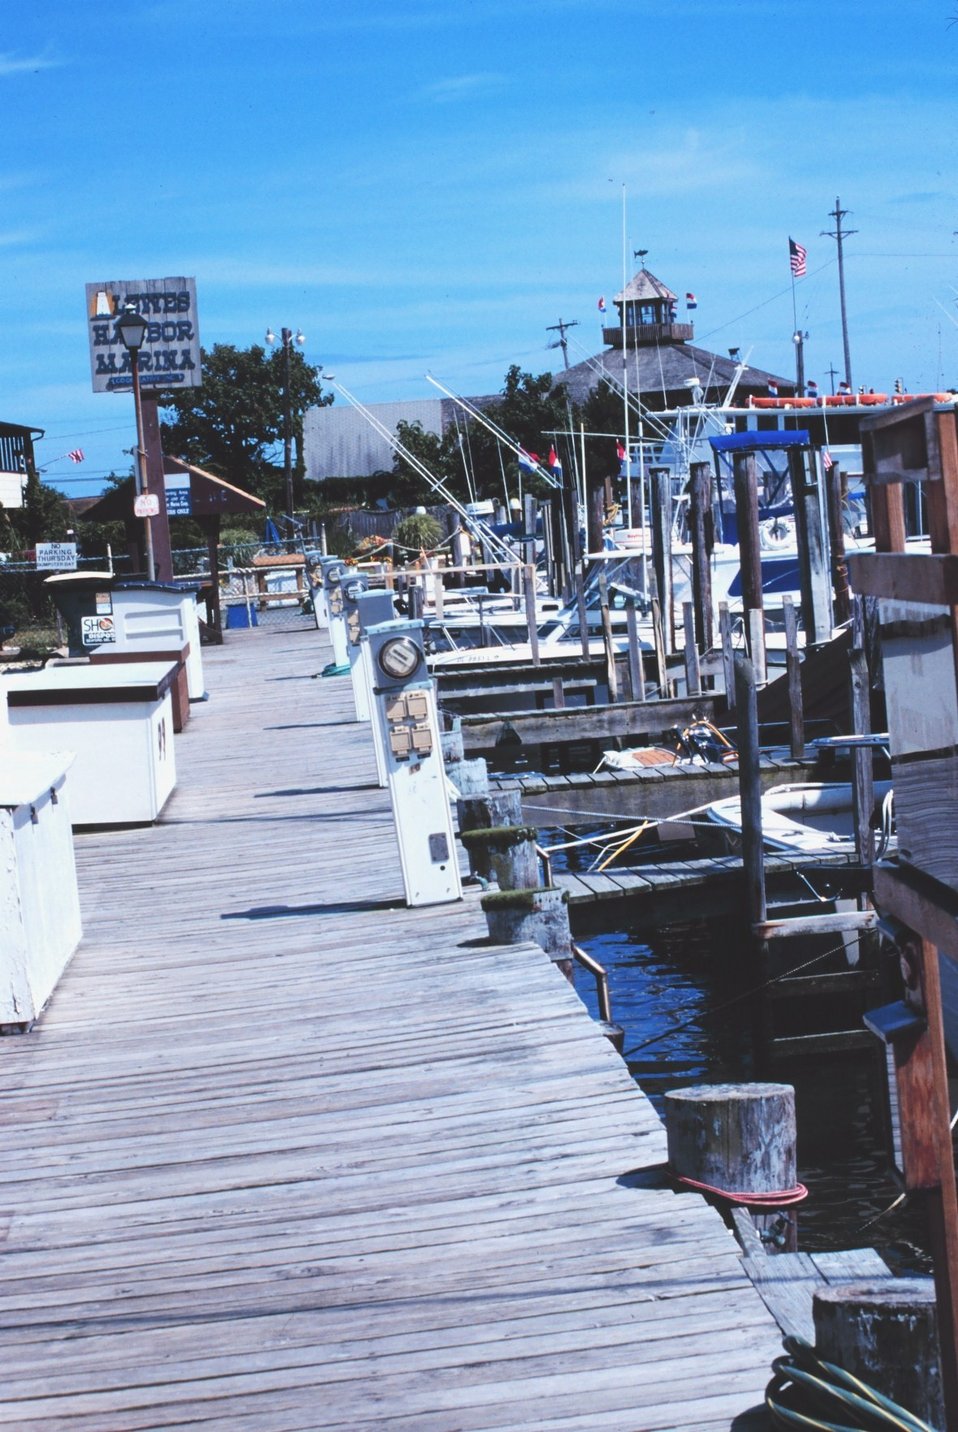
Recreational sport fishing boats at a pier in Lewes